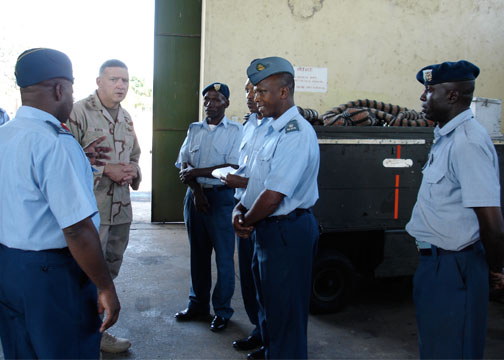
Leaders meet

Kenya Air Force Maj. Githaiga (center) engages members of the aircraft ground equipment maintenance unit in discussion with Lt. Gen. Gary North, U.S. Central Command Air Forces commander, at Laikipia Air Base, during the general's visit to Nairobi Feb. 8. General North met with Kenya Air Force officials to continue a dialogue of cooperation and mutual operational goals.